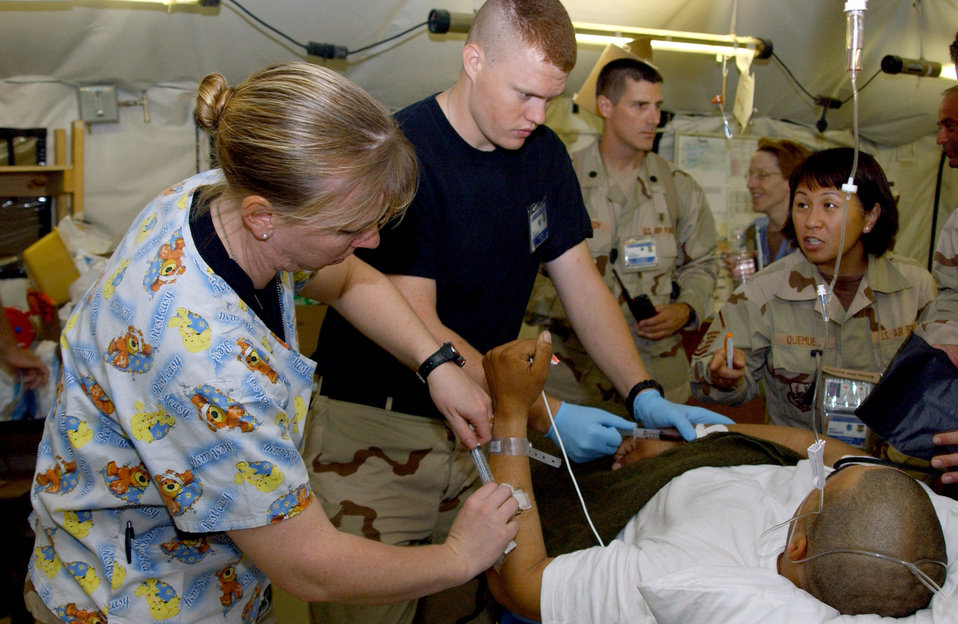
Balad's medics move into new facility

Second Lt. Christine Duro and Staff Sgt. Derick Tibbetts draw blood as Master Sgt. Nancy Quemuel discusses air evacuation and treatment for Army Cpl. Erick Rodriguez, a cavalry scout with the 2nd Infantry Division deployed from Ft. Lewis, Wash., Aug. 3. Corporal Rodriguez, assigned to Forward Operating Base Warhorse, sustained abdominal injuries from an improvised explosive device. He was the last patient to be treated in the Air Force Theater Hospital's tent facility at Balad Air Base, Iraq. Lieutenant Duro and Sergeant Tibbetts are assigned to the 332nd Expeditionary Medical Group. Sergeant Quemuel is assigned to the Contingency Aeromedical Staging Facility.